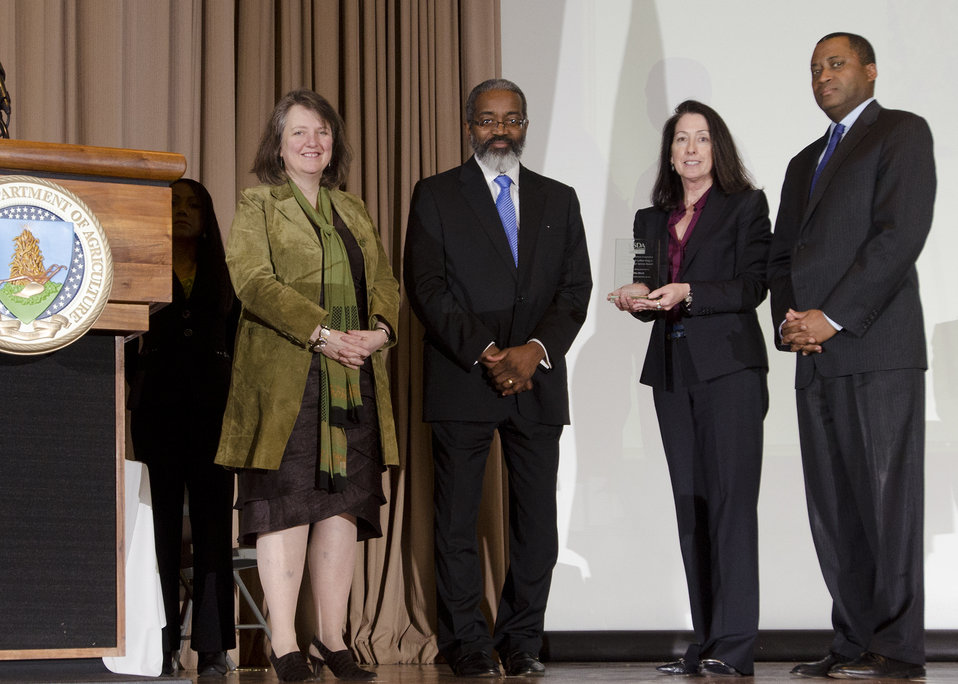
U.S. Department of Agriculture (USDA) Forest Service Hawaii Experimental Tropical Forest (HETF) Administrator from Hilo, HI Tabetha Block receives the Dr. Martin Luther King, Jr. National Service Day Drum Major Service Award (accepting the award in her absence is Forest Service Associate Chief Mary Wagner, second from right) at the Jefferson Auditorium in Washington, D.C. on Tuesday, Jan. 15, 2013. (L to R Agriculture Deputy Secretary Kathleen Merrigan, USDA Animal and Plant Health Inspection Service (APHIS) Administrator Dr. Gregory Parham, Forest Service Associate Chief Mary Wagner, and Agriculture Assistant Secretary for Civil Rights Dr. Joe Leonard.)